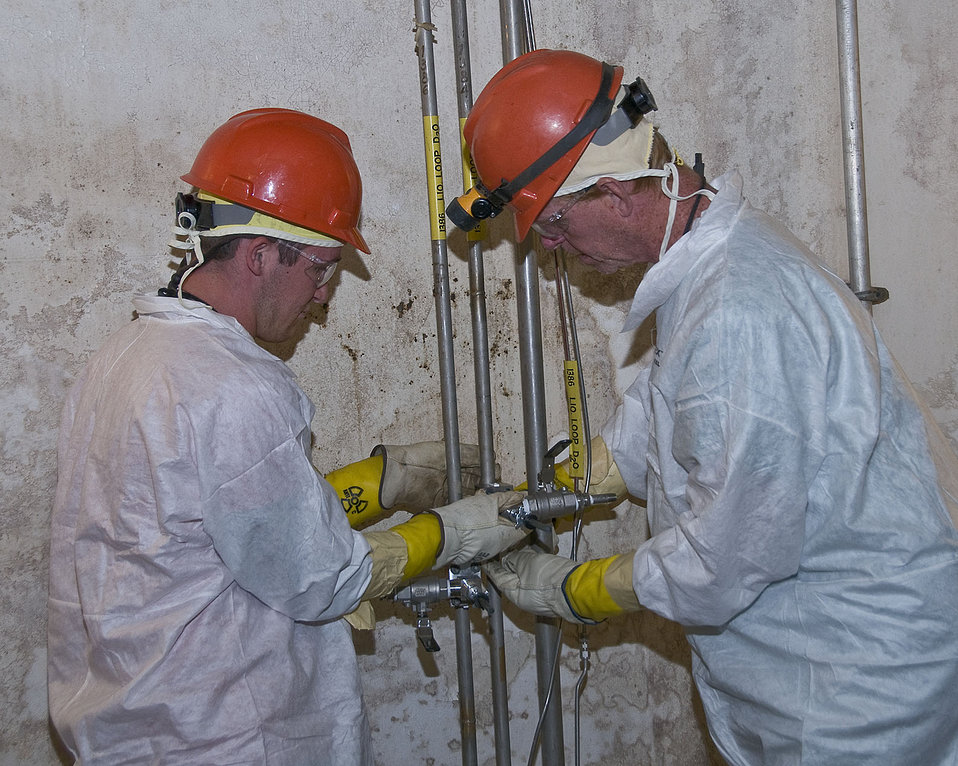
Significant Closure Activities Started at 50-Year-Old HWCTR

Workers install taps to drain fluids from old equipment before the next level of the reactor is enveloped by grout.

Another milestone for the Recovery Act: the first major closure activities at the half-century old Heavy Water Components Test Reactor (HWCTR) at the Savannah River Site in South Carolina.